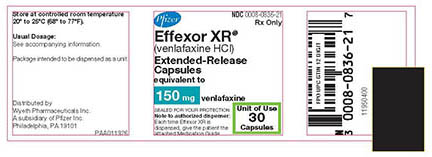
RECALLED – Venlafaxine HCl 150 mg extended-release capsules

March 6, 2014 – Product Recall – Pfizer Initiates Nationwide Voluntary Recall of Two Lots of Pfizer’s Effexor XR® 150 Mg Extended-Release Capsules and One Lot of Greenstone’s Venlafaxine HCl 150 Mg Extended-Release Capsules Due to the Possible Presence of Tikosyn® Capsules.